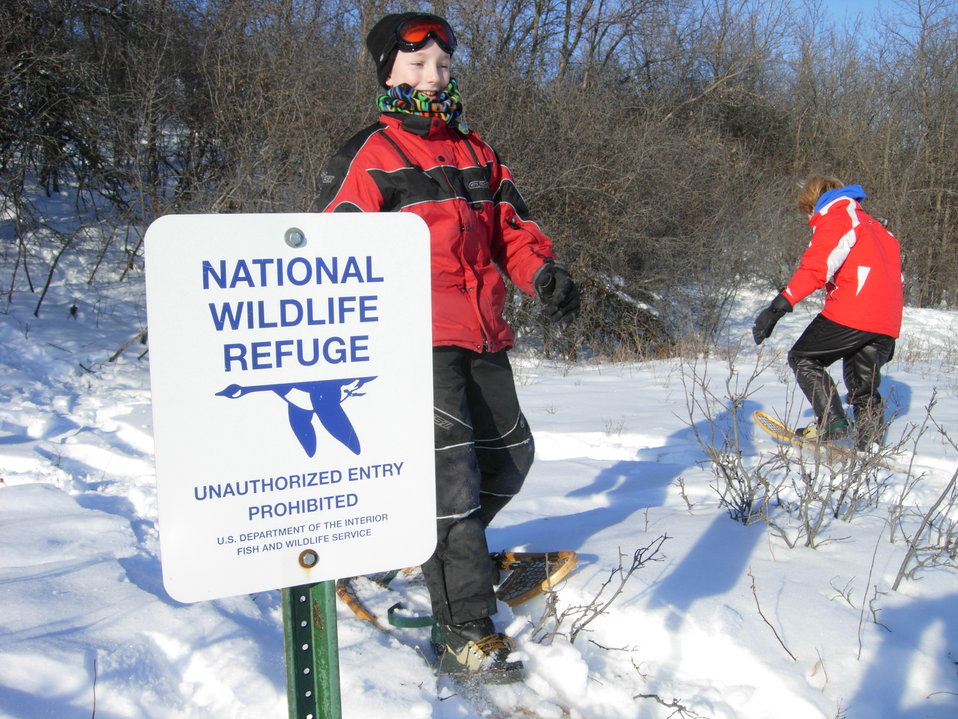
Let's Go Snowshoeing! Jan 29, 2011

Trying out their 'skills' in the deeper snow!
Pictured: Dakota Petersen of Kenmare